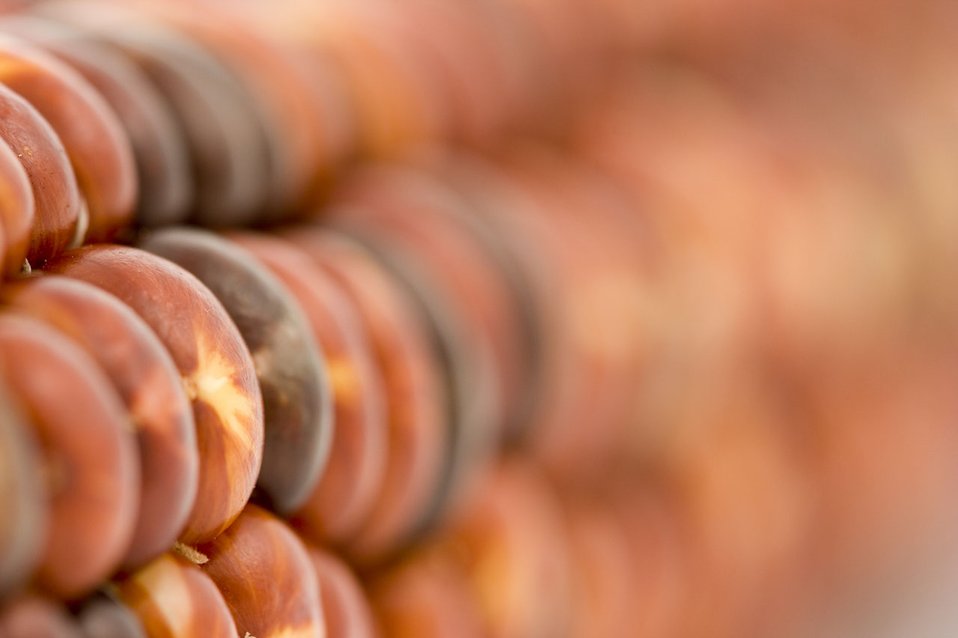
Red corn

Indian red corn for halloween.